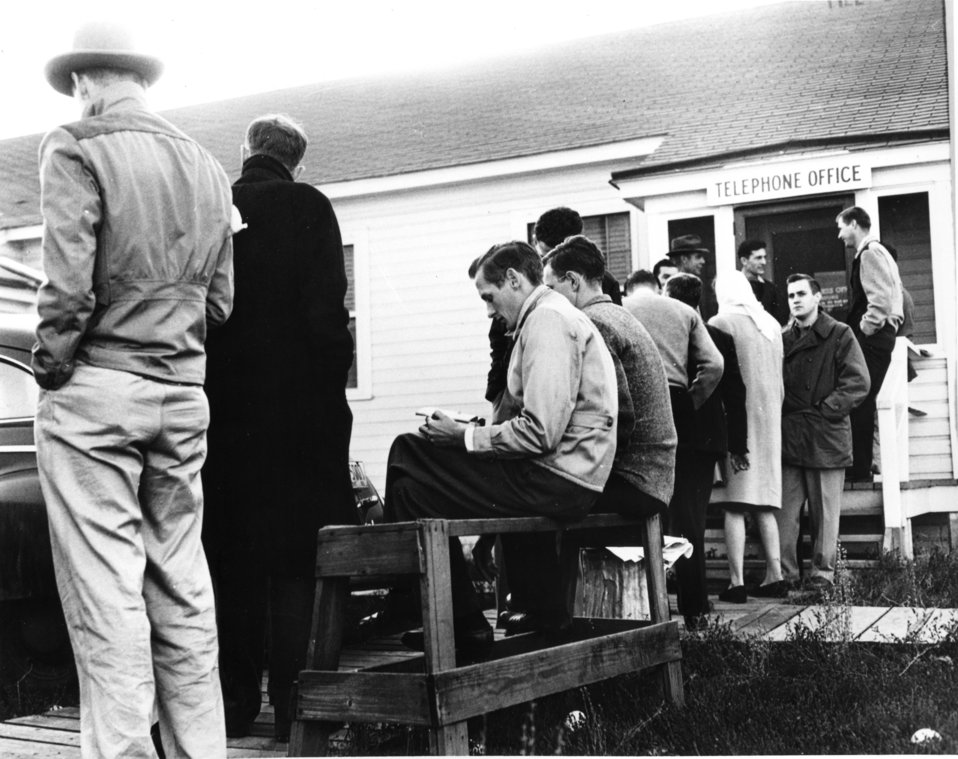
Services at Oak Ridge